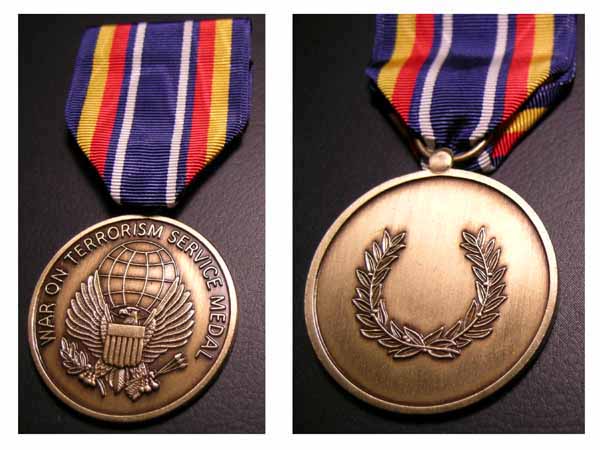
War on terrorism medals introduced

WASHINGTON -- The Global War on Terrorism Service Medal has an eagle and wings display, with a terrestrial globe and the inscription